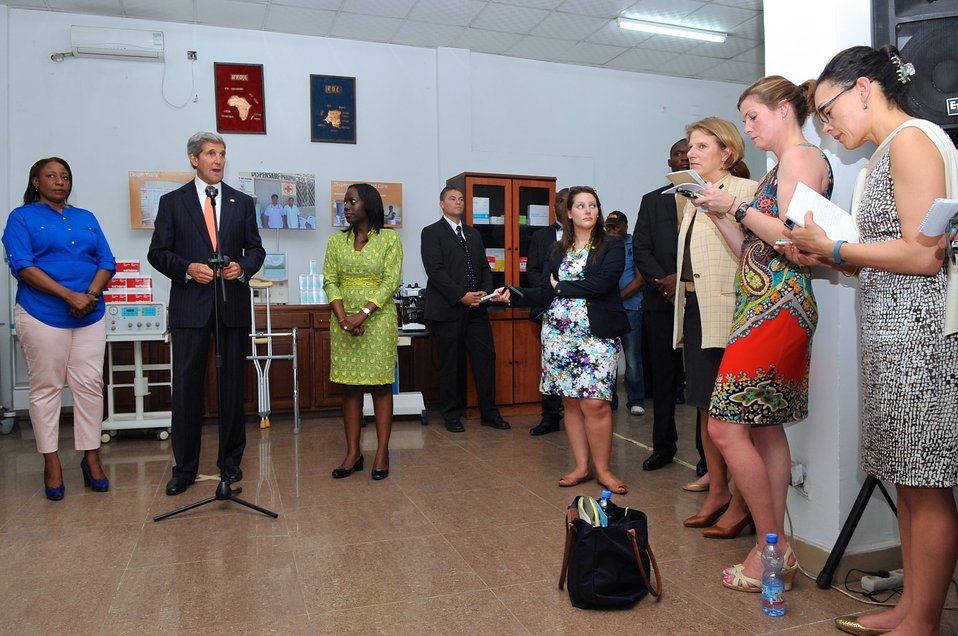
Secretary Kerry Speaks About Microfinance Program Started by YALI Graduate

U.S. Secretary of State John Kerry, flanked by Irene Mpoy, left, explains how Young African Leaders Initiative alumnae Patricia Nzolantima started a micro finance program to help start medical supply stores like the one he toured in Kinshasa, Democratic Republic of Congo, on May 3, 2014.